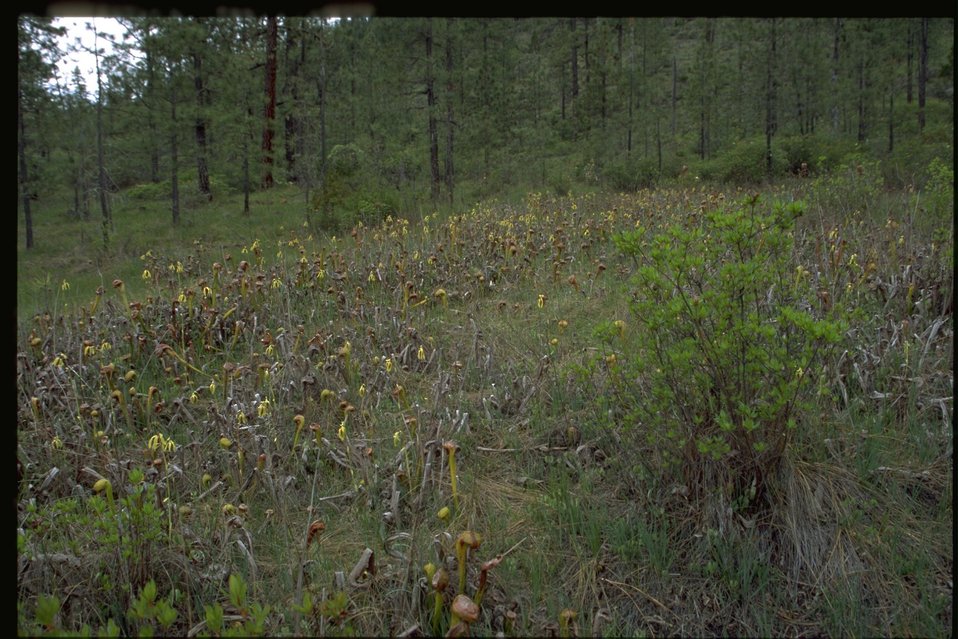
Farshot of Darlingtoniaq fen.